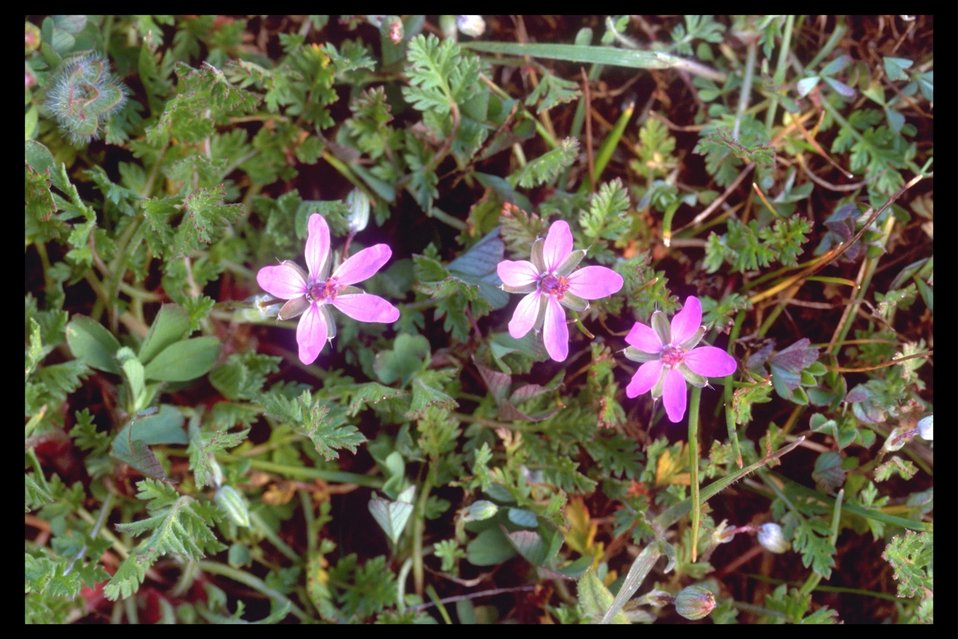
Filaree, Redstem Stork's Bill (Erodium cicutarium) at Upper Table Rock Area.